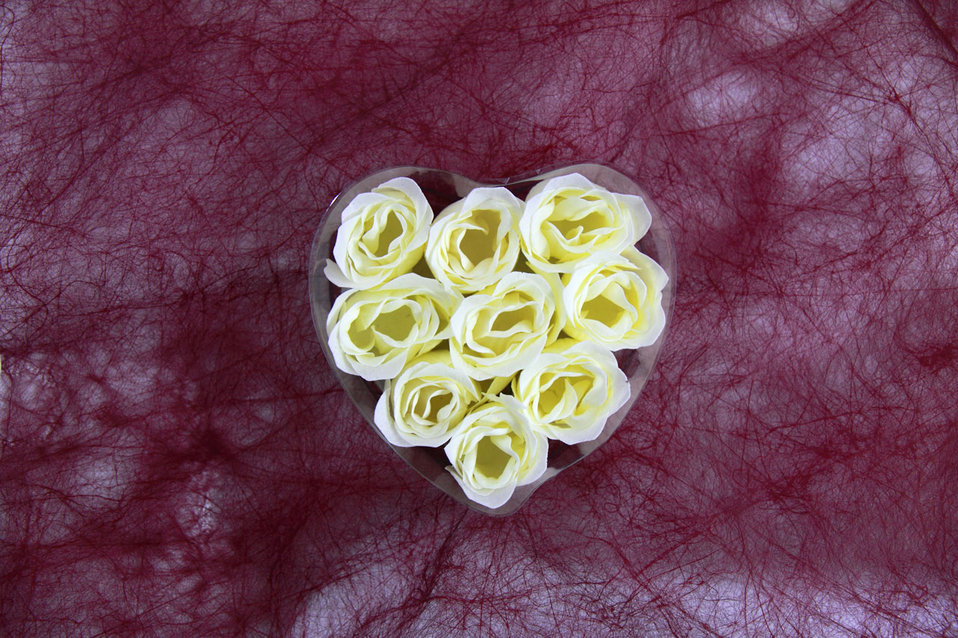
Heart from roses

White heart made from roses.